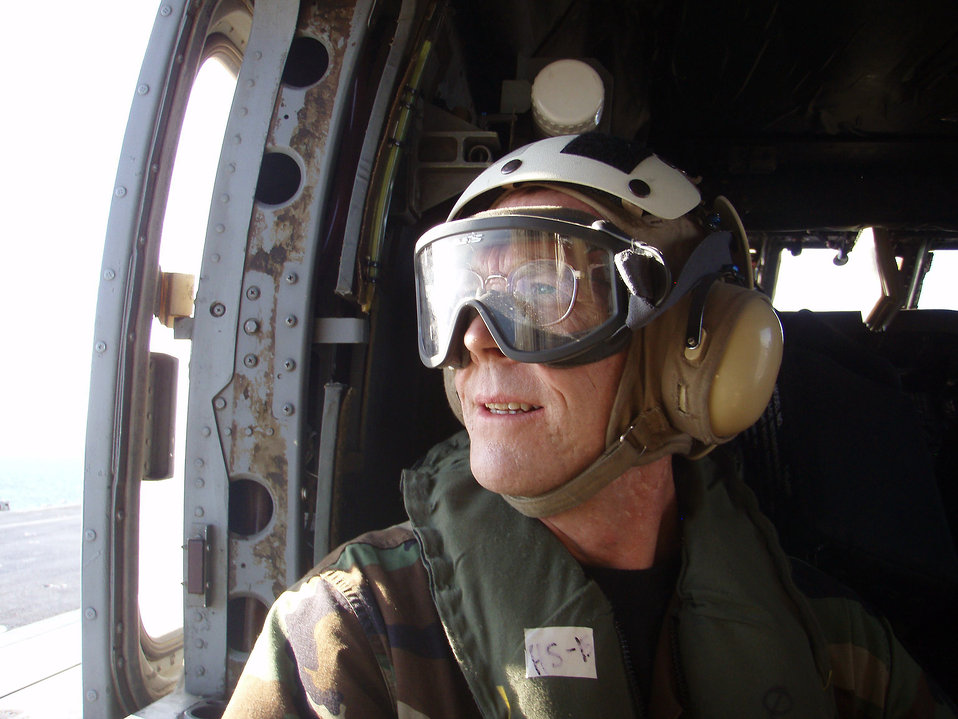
This was U.S. Public Health Service (USPHS) Capt. David Shoultz during his helicopter transport, and the transport of his fellow USPHS corpsmen to the aircraft carrier, USS Bataan, after leaving the deck of the Nimitz class supercarrier, USS Carl Vinson (CVN-70).